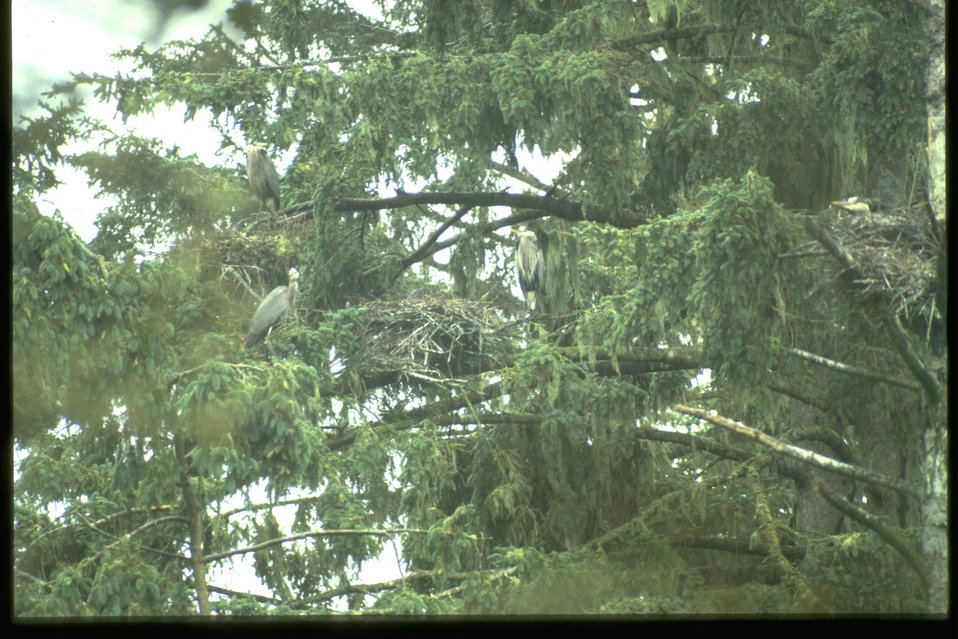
Blue Heron in nest at North Spit.